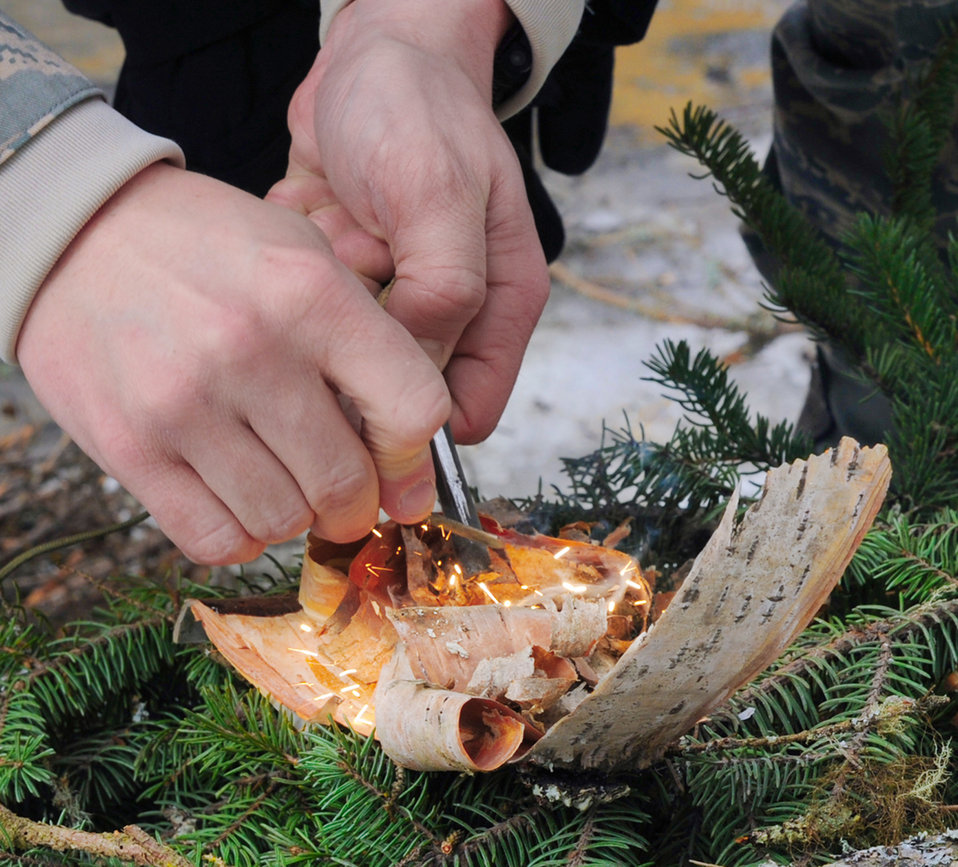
Airmen train for cold weather survival

Capt. Andrew Hull uses a magnesium stick to start his fire during survival, evasion, resistance and escape field training April 12, 2010, at Elmendorf Air Force Base, Alaska. Captain Hull is an airborne surveillance officer with the 962nd Airborne Air Control Squadron.